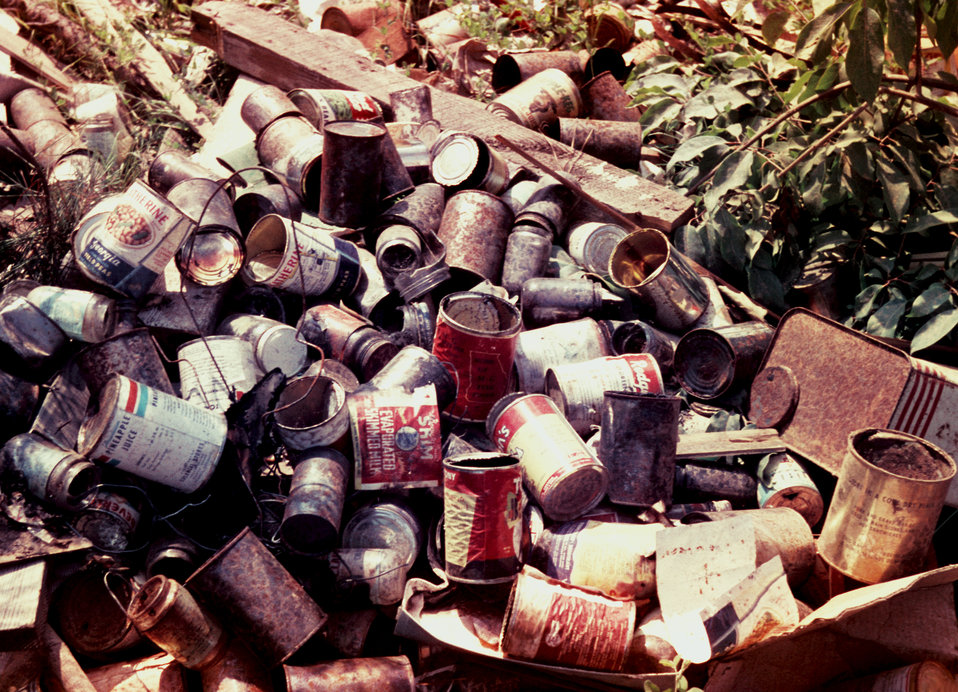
Domestic mosquitoes can breed in tin cans in open dumps.